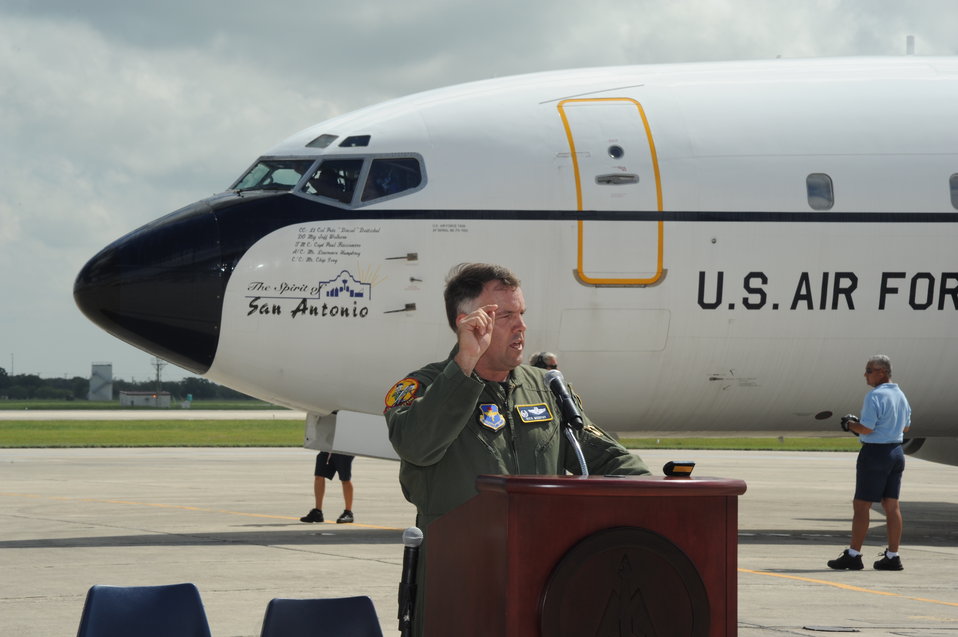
T-43 retires

Col. Richard Murphy makes closing remarks Sept. 17, 2010, during a retirement ceremony at Randolph Air Force Base, Texas, for the T-43 combat systems officer trainer. The T-43, a version of the Boeing 737, retires from the Air Force inventory after 37 years of service as a navigator training platform. The CSO training mission will be moving to Naval Air Station Pensacola, Fla. Colonel Murphy is the 12th Flying Training Wing commander.